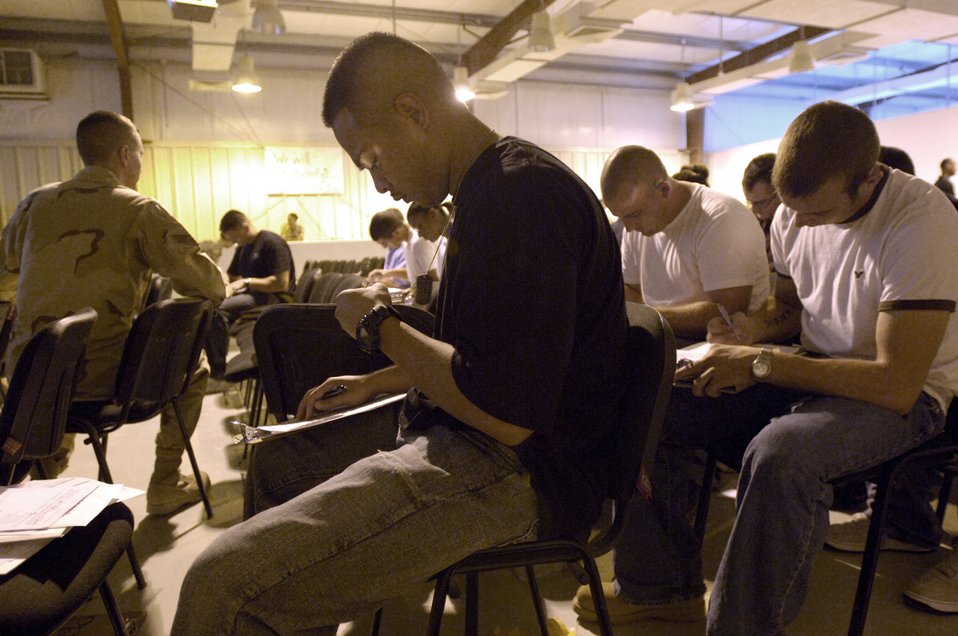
Work begins when boots hit the ground

Senior Airman Jayar DelaCruz verifies information on his dog tags during inprocessing in Southwest Asia Sept. 17. Airman DelaCruz is a civil engineer operations apprentice from Andrews Air Force Base, Md.